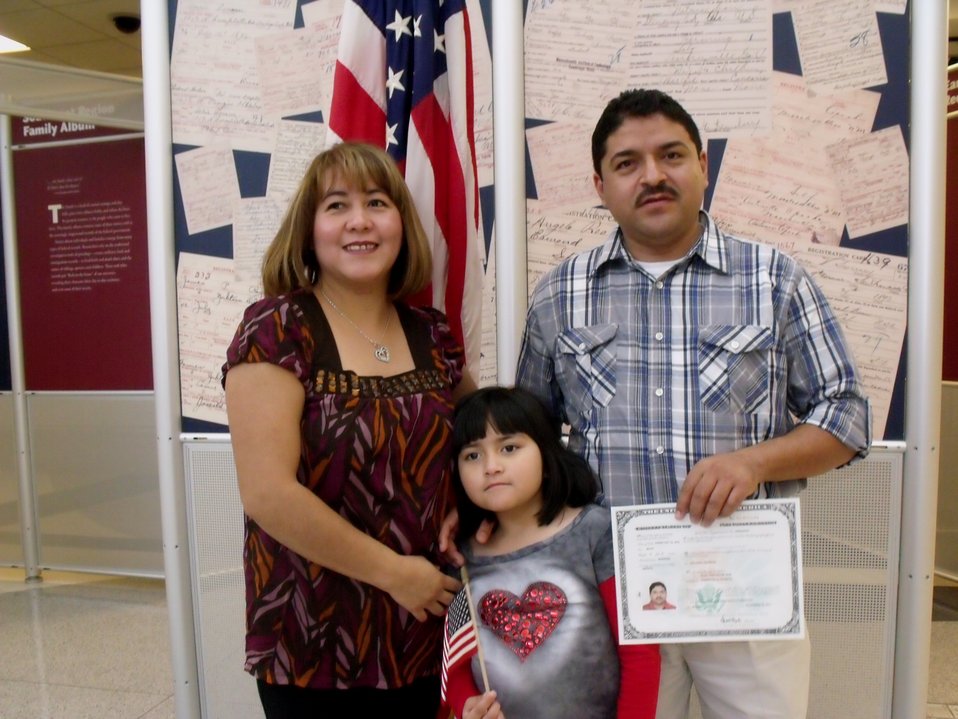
New Citizens